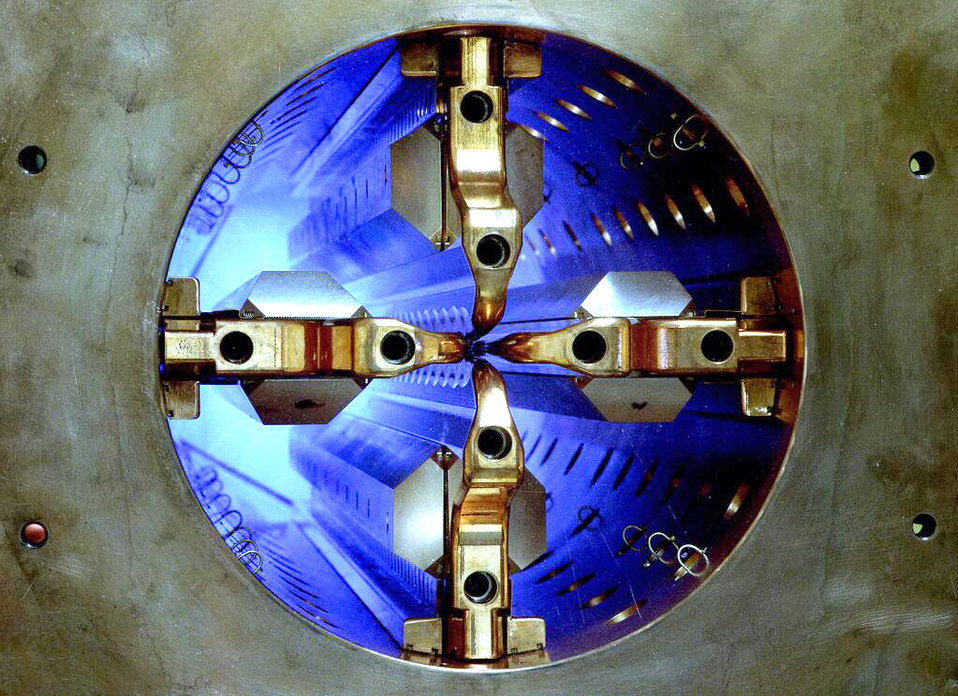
RADIO-FREQUENCY QUADRUPOLE, DESIGNED TO FOCUS AND ACCELERATE PARTICLE BEAMS AT BROOKHAVEN NATIONAL LABORATORY'S ALTERNATING GRADIENT SYNCHROTRON.

This magnetic passageway prepared protons for injection into the Alternating Gradient Synchrotron a source of fundamental physics breakthroughs and three Nobel Prizes.